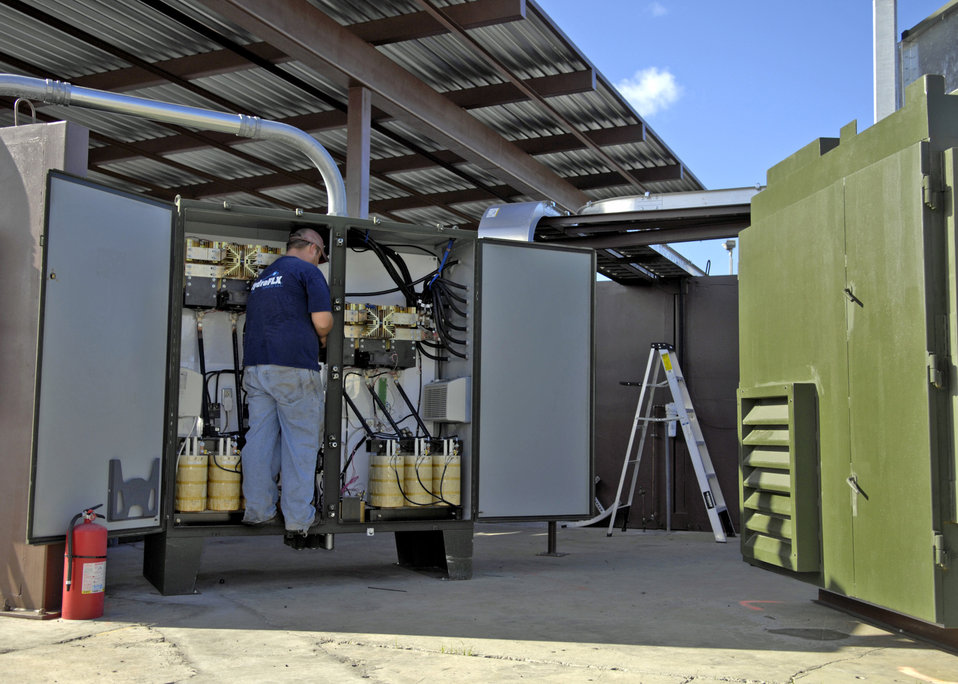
Alternate Energy Source

Matthew Morse lands power leads for the water purification system on the power supply for the HydraFLX System at Hickam Air Force Base, Hawaii Oct. 27, 2006. Morse is program engineer for HydraFLX Systems LLC. The HydraFLX System is being tested by the Air Force as an alternate energy source. It will generate ultra-pure H2 (hydrogen) from water in a flexible pressure management process for fueling buses, tow-tractors, vans, sedans and ground support equipment. The system can also be deployed anywhere and operate in hostile theaters without infrastructure or pipelines.